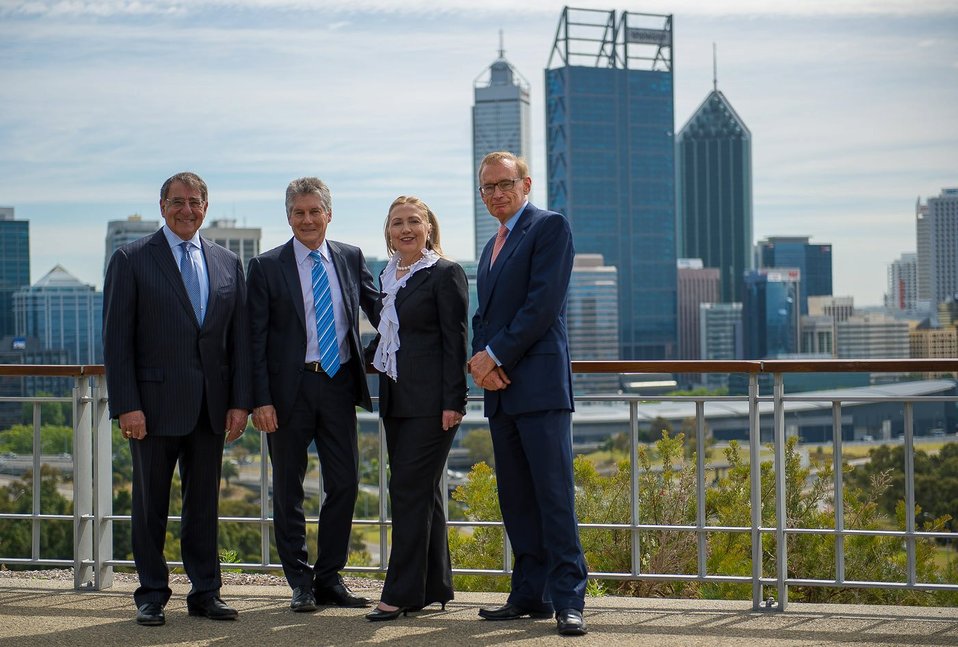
Secretary Panetta, Minister Smith, Secretary Clinton, and Minister Carr Pose for a Photo

From left to right, U.S. Secretary of State Leon Panetta, Australian Defense Minister Stephen Smith, U.S. Secretary of State Hillary Rodham Clinton, and Australian Foreign Minister Robert Carr pose for a photo at Kings Park and Botanic Garden in Perth, Australia, November 14, 2012. [U.S. Embassy in Canberra, Australia photo by Travis Longmore/ Public Domain]